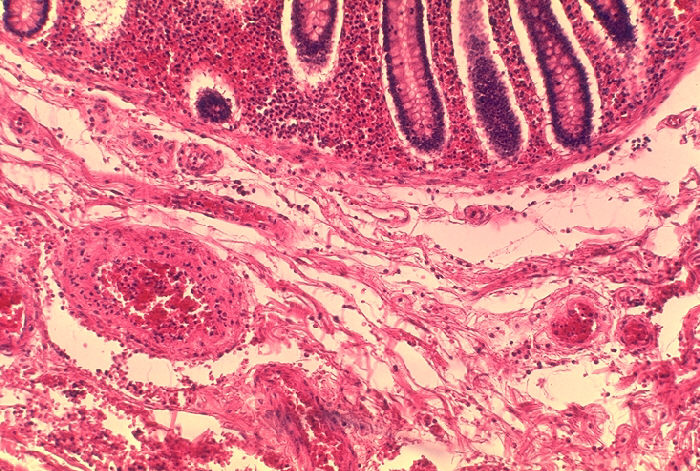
Histopathology of large intestine in fatal human anthrax.